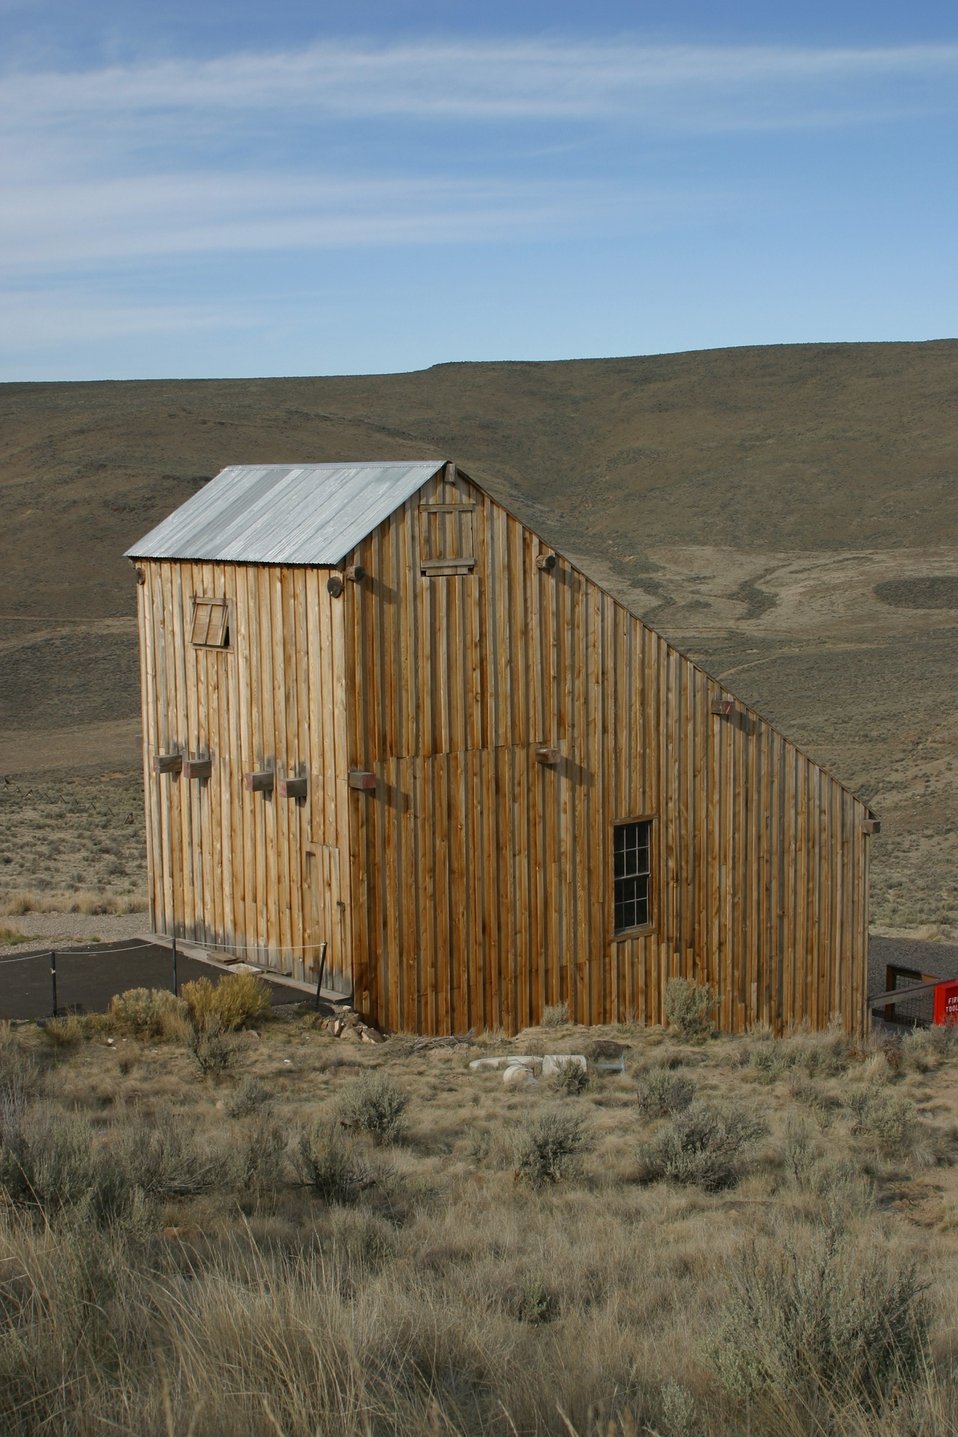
A replica of the Rabbit Mine 1926 stamp mill near Greenhorn in the Blue Mountains of eastern Oregon. It is used to interpret the importance of mining in western history, and the relationship of gold mining to the westward migration story.